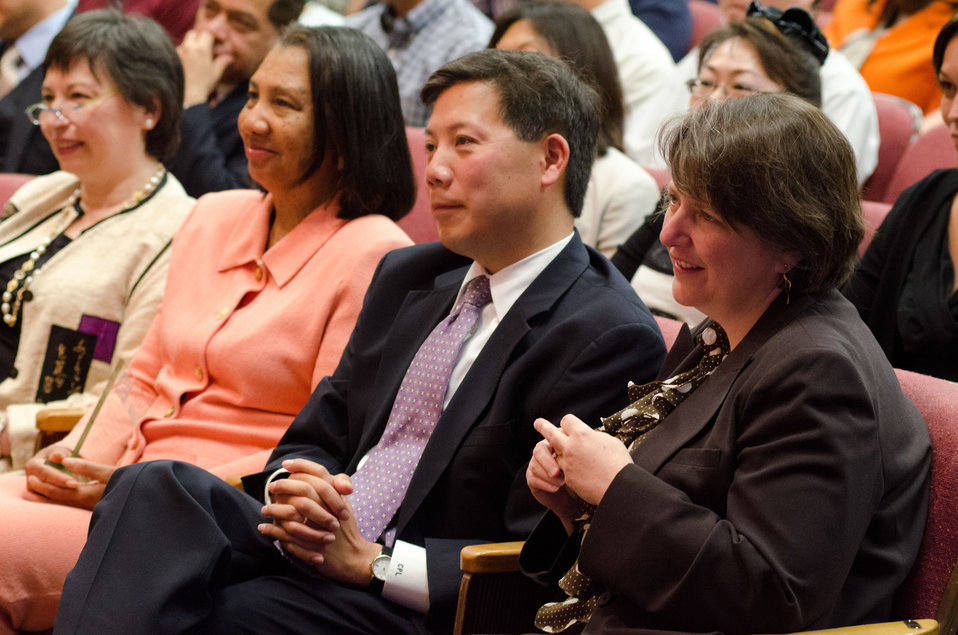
(L to R) Agriculture Foreign Agricultural Service Associate Administrator Janet Nuzum, Agriculture Associate Assistant Secretary for Administration Dr. Alma Hobbs, Assistant to the President and Cabinet Secretary The White House Chris Lu, and Agriculture Deputy Secretary Kathleen Merrigan listen to speakers at the 2012 Asian Pacific American Heritage Observance “Striving for Excellence in Leadership, Diversity and Inclusion” at the U.S. Department of Agriculture in Washington, D.C. on Thursday, May 24, 2012.